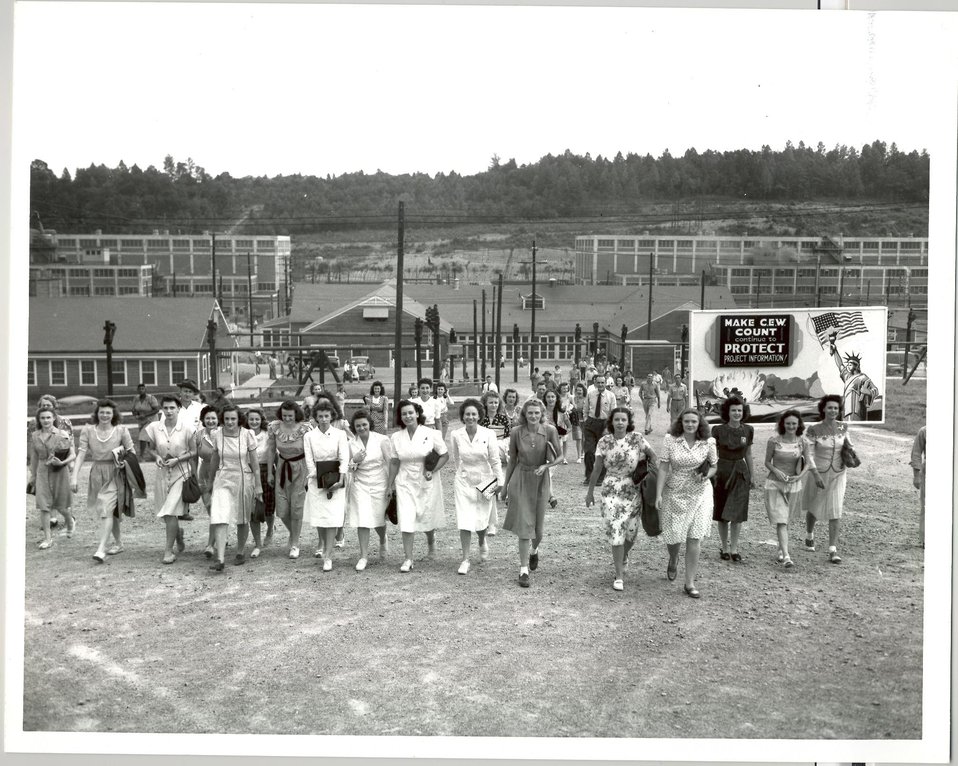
Women Workers Shift Change Y-12